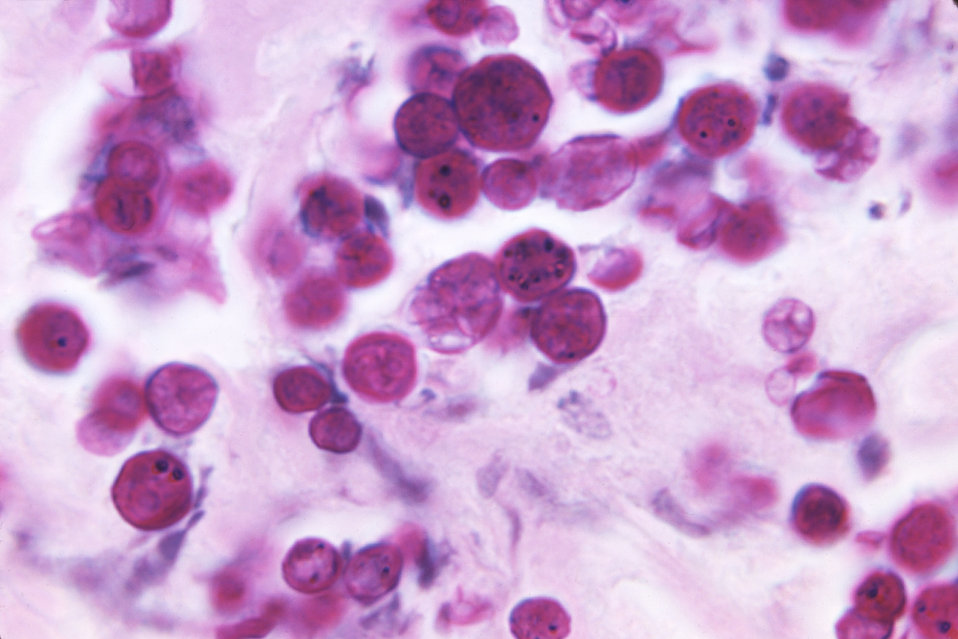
Under a magnification of 1850X, this PAS-stained (Periodic acid-Schiff) photomicrograph revealed histopathologic changes found in a tissue sample from a case of protothecosis, which is caused by the green algae, Prototheca.